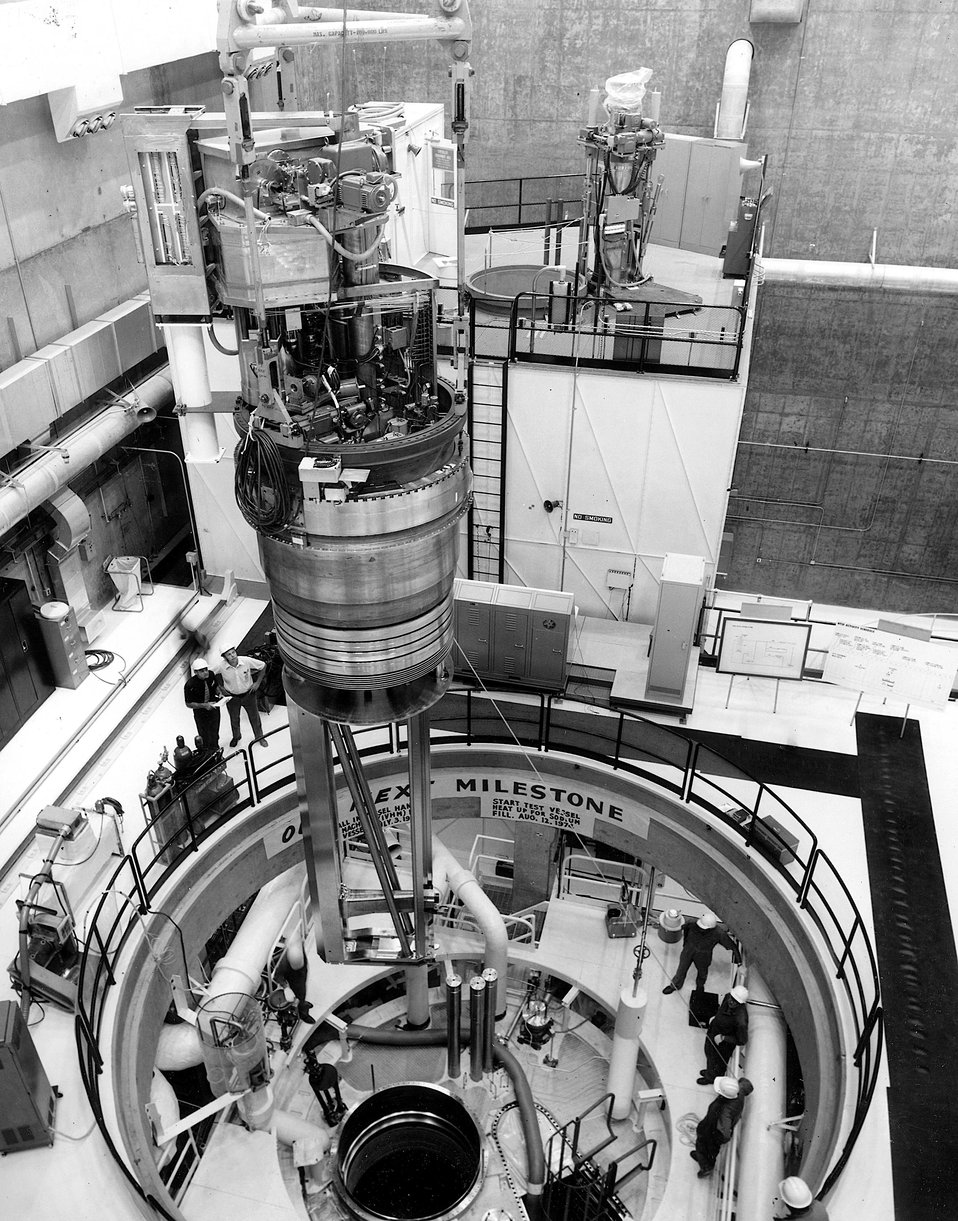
The Fast Flux Test Reactor's in-vessel handling machine was tested at the high Temperature Sodium Facility in fall 1974. c. 1974